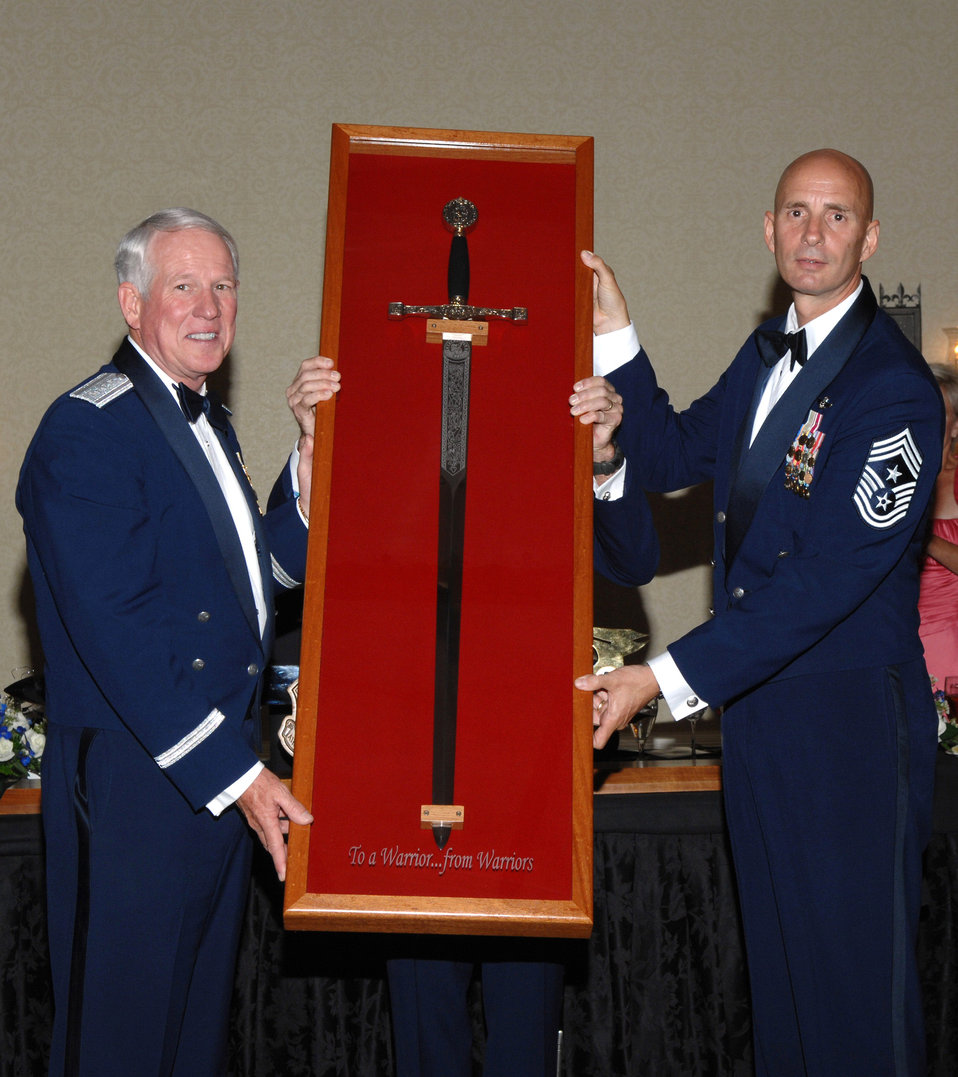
Enlisted members give highest honor to AETC commander

Gen. William R. Looney III receives a commemorative sword from Chief Master Sgt. Mark Luzader during the Order of the Sword presentation ceremony May 30 in San Antonio. The general received the highest honor the enlisted corps can bestow upon its leader. General Looney is the commander of Air Education and Training Command, and Chief Luzader is the AETC command chief.